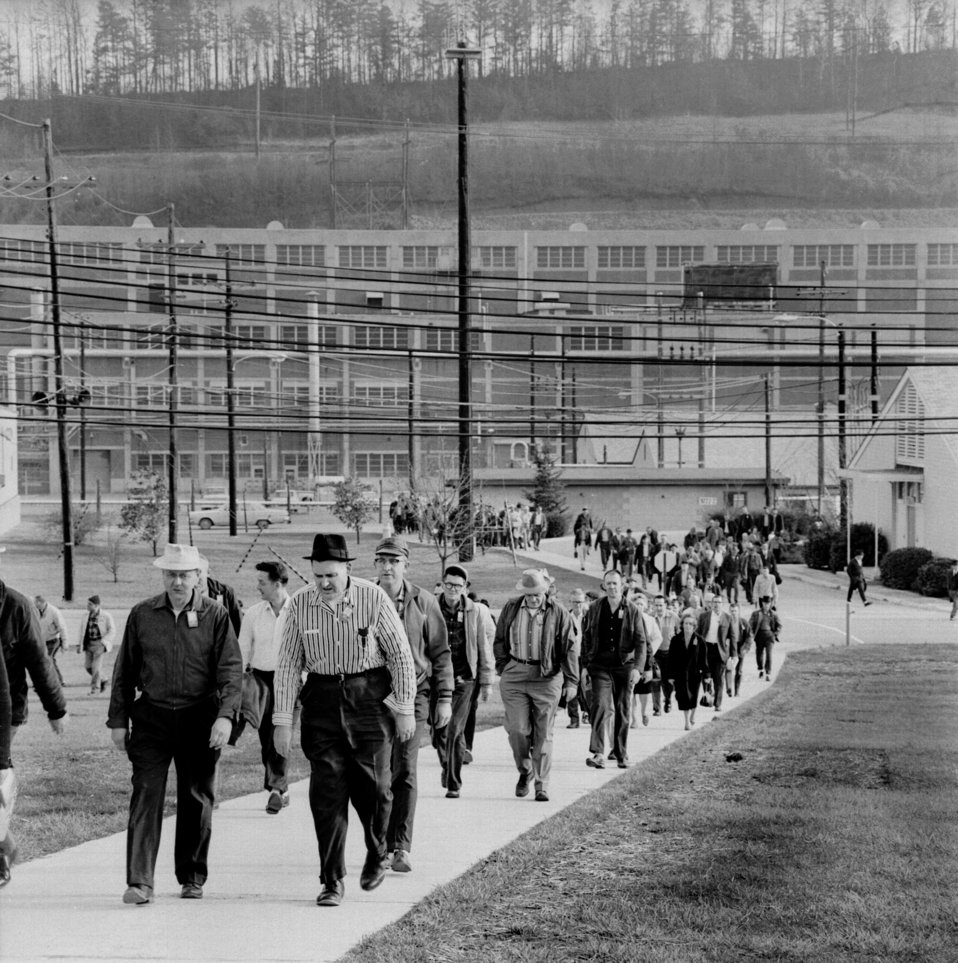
Shift change at Y-12 Oak Ridge

66-0022a DOE photo by Ed Westcott

Shift change at Y-12 Oak Ridge Tennessee 2-14-1966